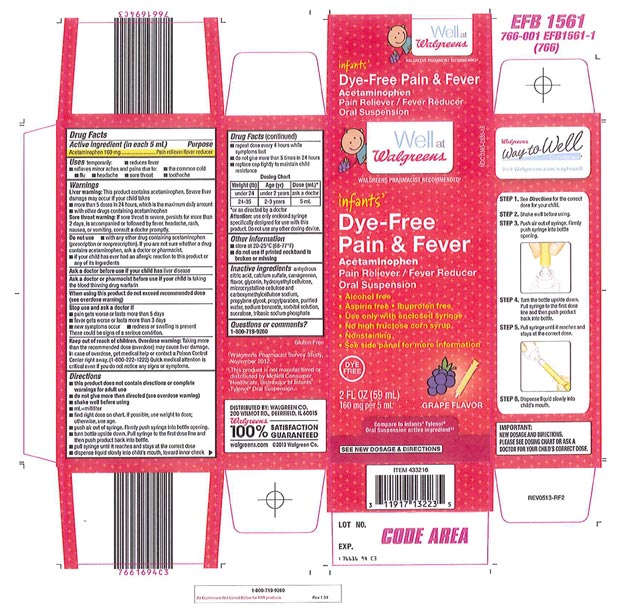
Recalled - Acetaminophen infant suspension liquid

November 1, 2013 – Product Recall – Perrigo Initiates Nationwide Voluntary Product Recall of Acetaminophen Infant Suspension Liquid, 160 Mg/5 Ml, Due to a Potential Defect with the Co-packaged Oral Syringe.